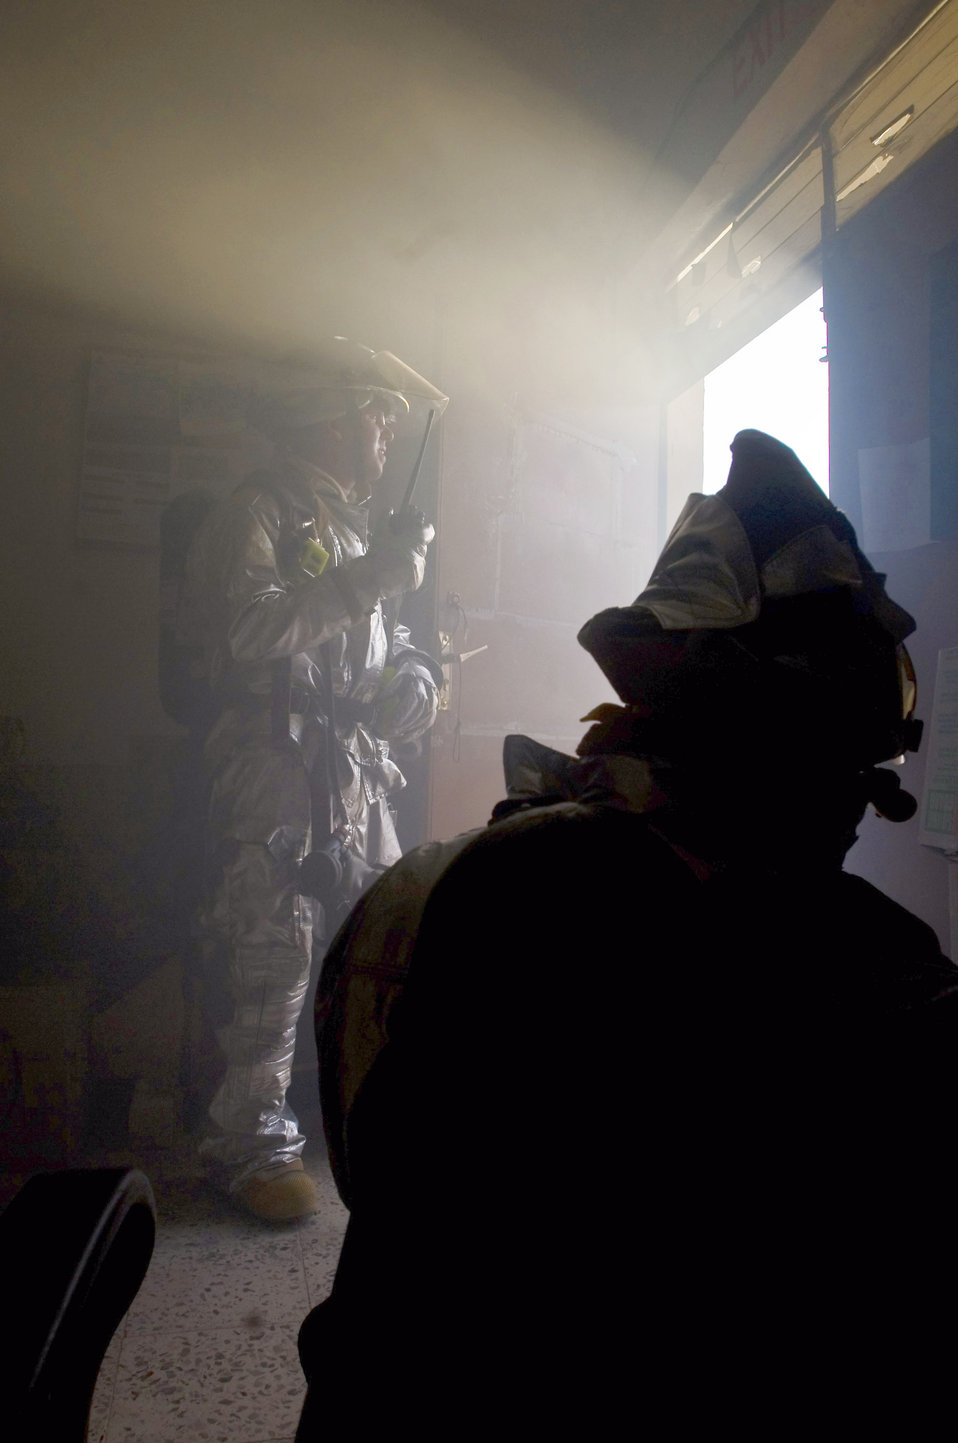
Practice makes perfect

Tech. Sgt. Garrick Hasty opens a door to clear smoke from a room during a structural firefighting drill Oct. 3 at Ali Base, Iraq. Sergeant Hasty, a firefighter with the 407th Expeditionary Civil Engineer Squadron, is deployed from Vandenberg Air Force Base, Calif.